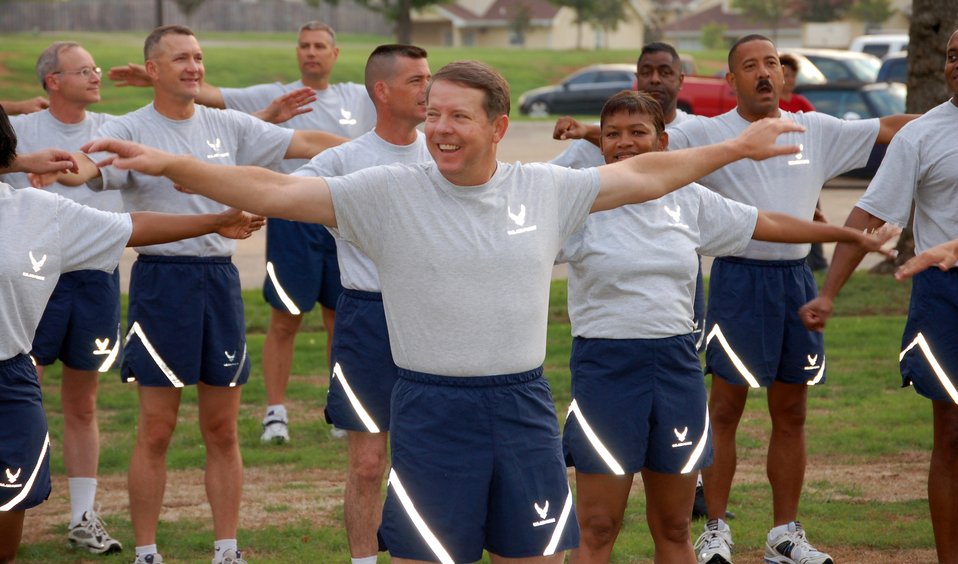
Enlisted leaders hit the road to set example

Chief Master Sgt. of the Air Force Rodney J. McKinley warms up with other senior enlisted leaders July 22 before a fitness run that kicked off the Senior Enlisted Leader Summit at Maxwell Air Force Base's Gunter Annex, Ala.